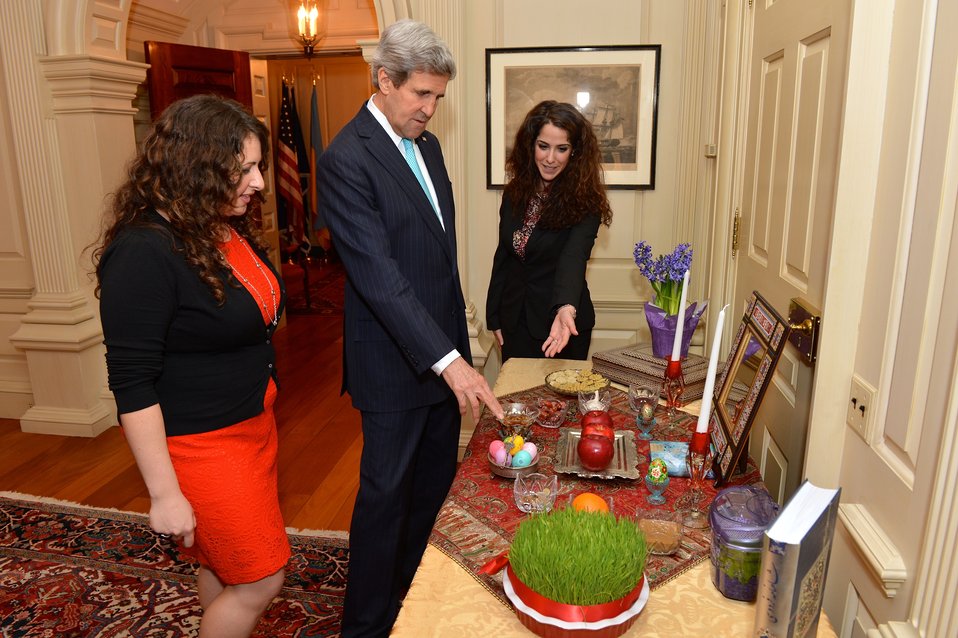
Secretary Kerry Celebrates Nowruz

U.S. Secretary of State John Kerry listens as members of the Iranian-American community describe the significance of the items on Secretary Kerry's Haft Seen Sofreh outside his office at the U.S. Department of State in Washington, D.C.